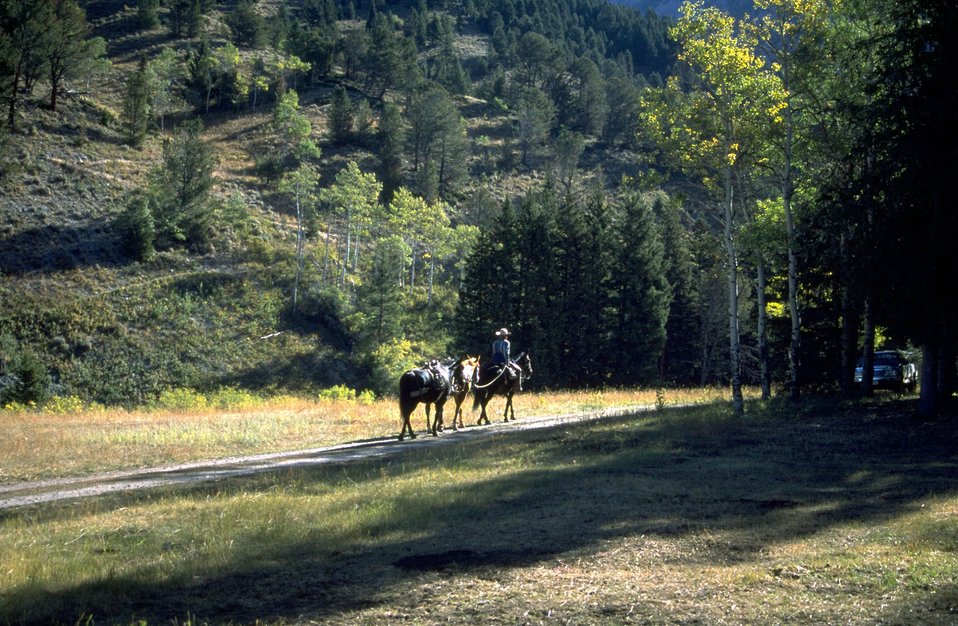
Horse back rider leading pack horses - Aspens in the background